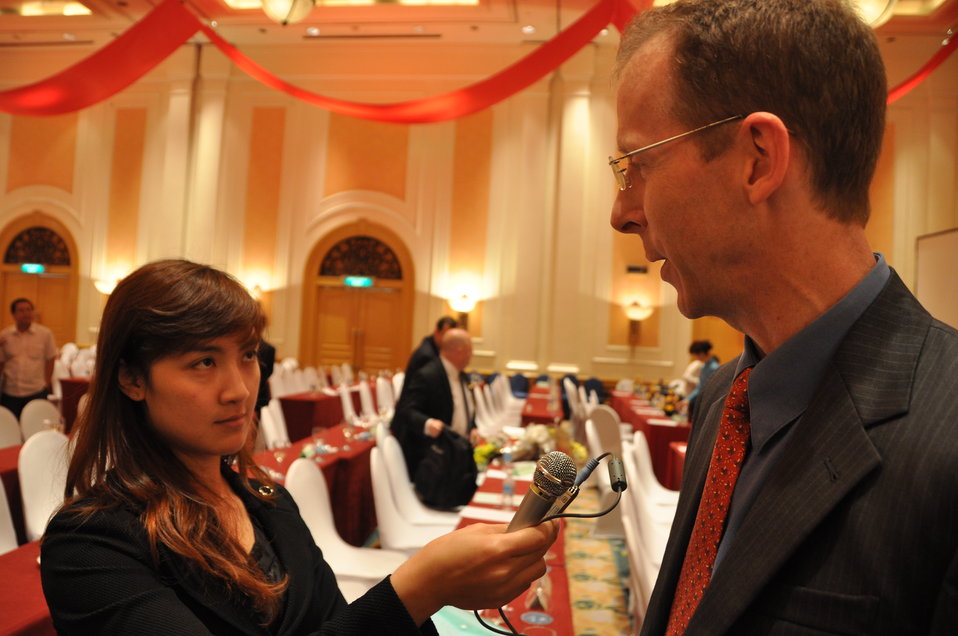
USAID Mission Director Joakim Parker talks to the press at the Provincial Competitiveness Index Launch, March 14, 2013

Hanoi, March 13, 2013